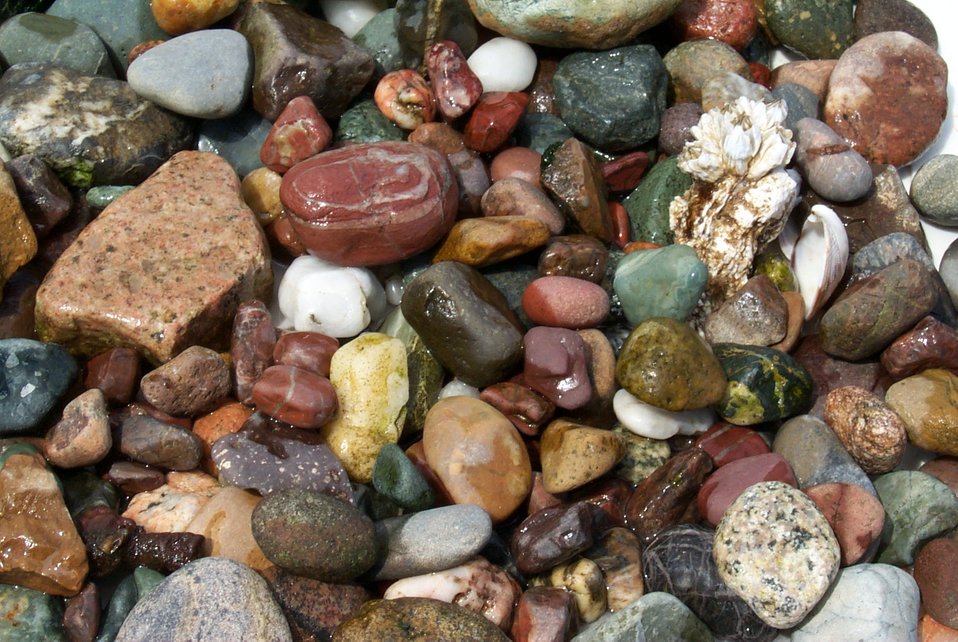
Random rocks and barnacle picked up on the beach at Gig Harbor.